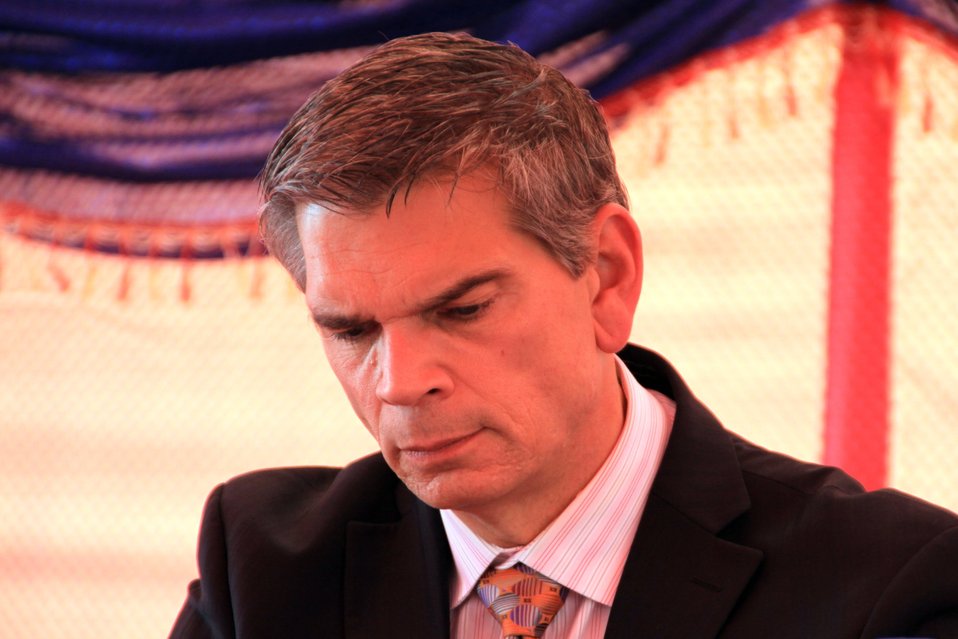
Badam Bagh Farm